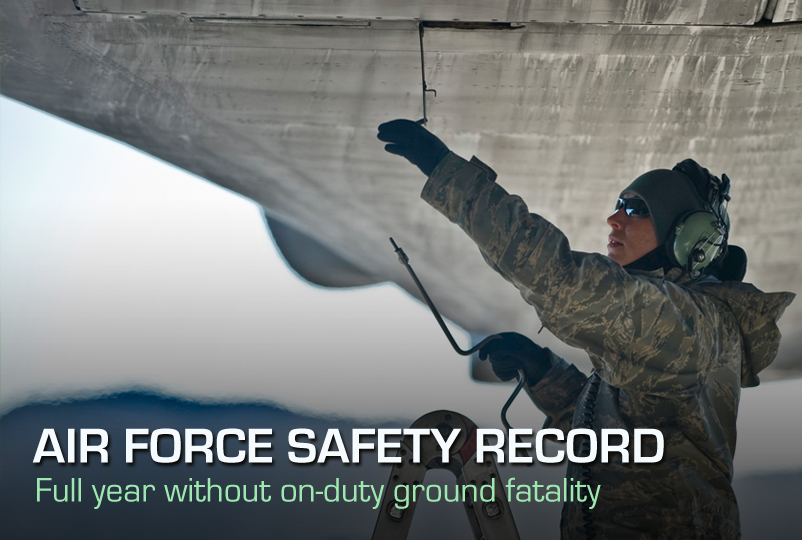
Air Force safety record